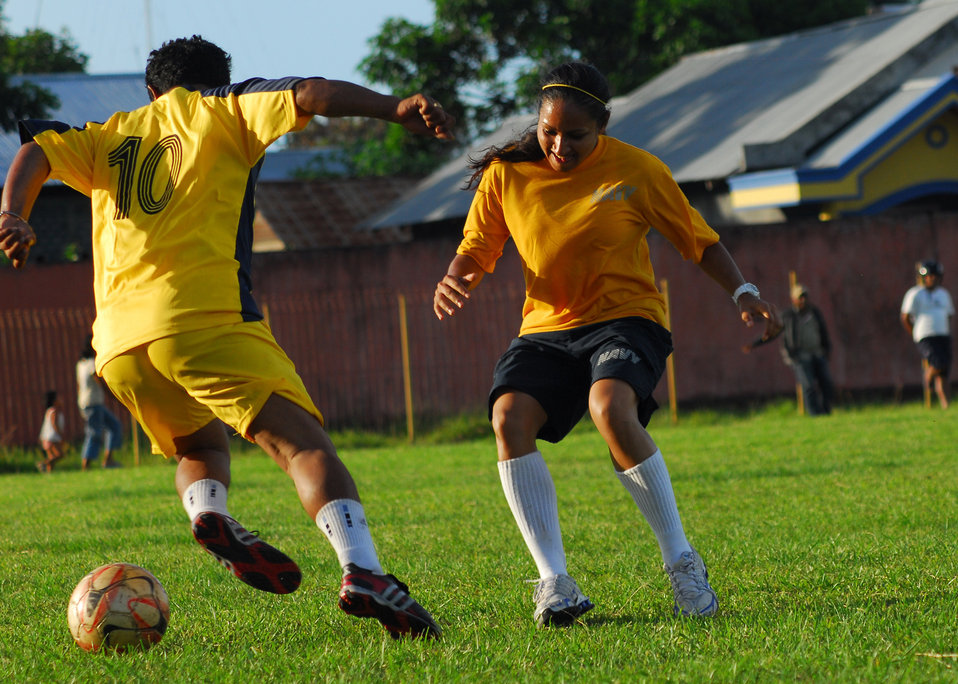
Lt. j.g. Persad Plays Defense During a Soccer Match

Lt. j.g. Clare Persad plays defense during a soccer match between host nation Indonesians and Sailors during a community service event in Tobelo, Indonesia, on July 15, 2010. The Military Sealift Command hospital ship USNS Mercy (T-AH 19) is in the North Maluku Islands conducting Pacific Partnership 2010, the fifth in a series of annual U.S. Pacific Fleet endeavors conducted in Indonesia as a disaster relief exercise aimed at strengthening regional partnerships.